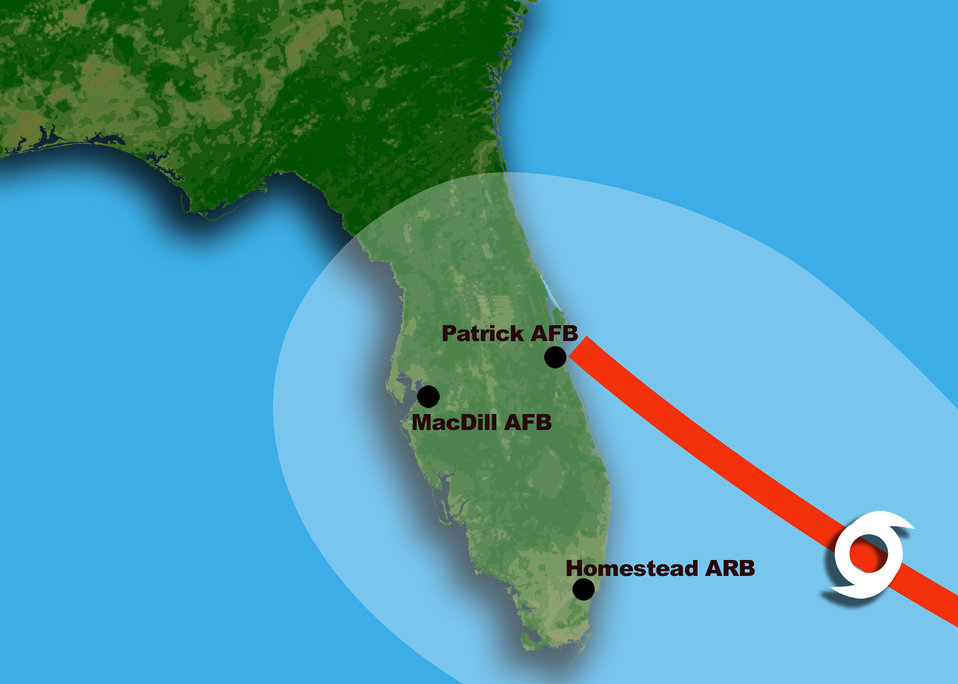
Hurricane Frances

SAN ANTONIO -- National Hurricane Center officials expect Hurricane Frances to reach Florida on Sept. 4.